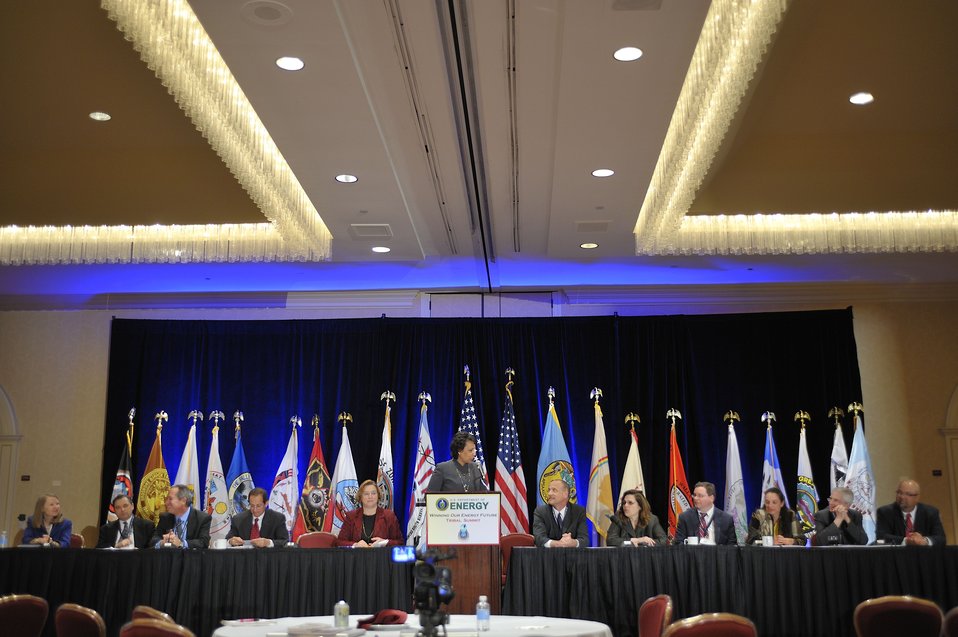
Tribal Energy Summit

Tracey LeBeau, Director of the Office of Indian Energy Policy and Programs facilitates discussion of DOE leadership panel.